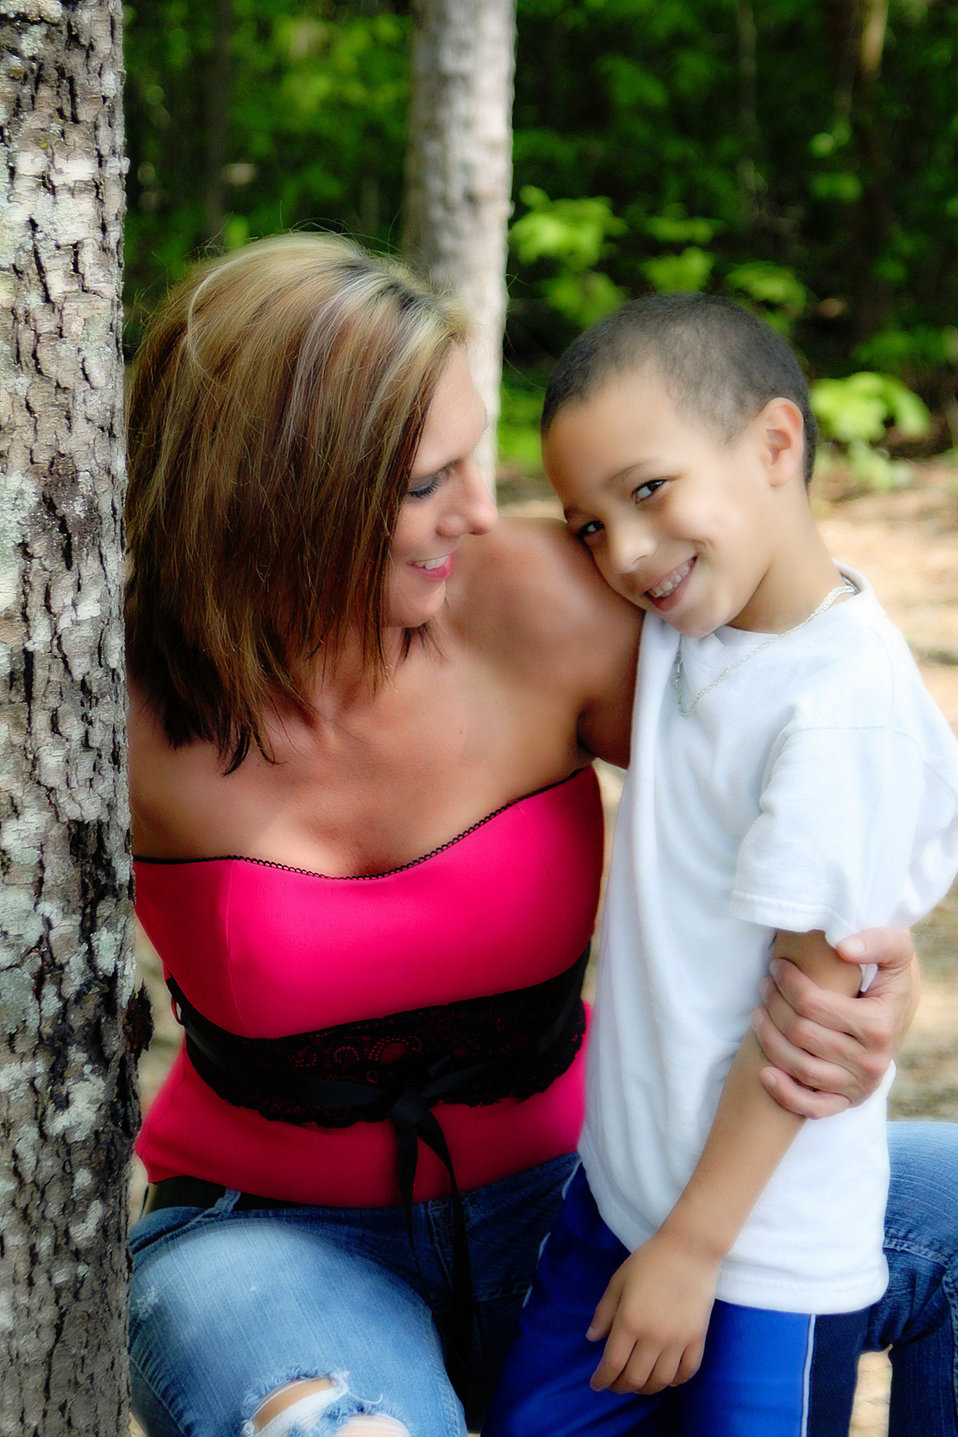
Love

Woman and child.